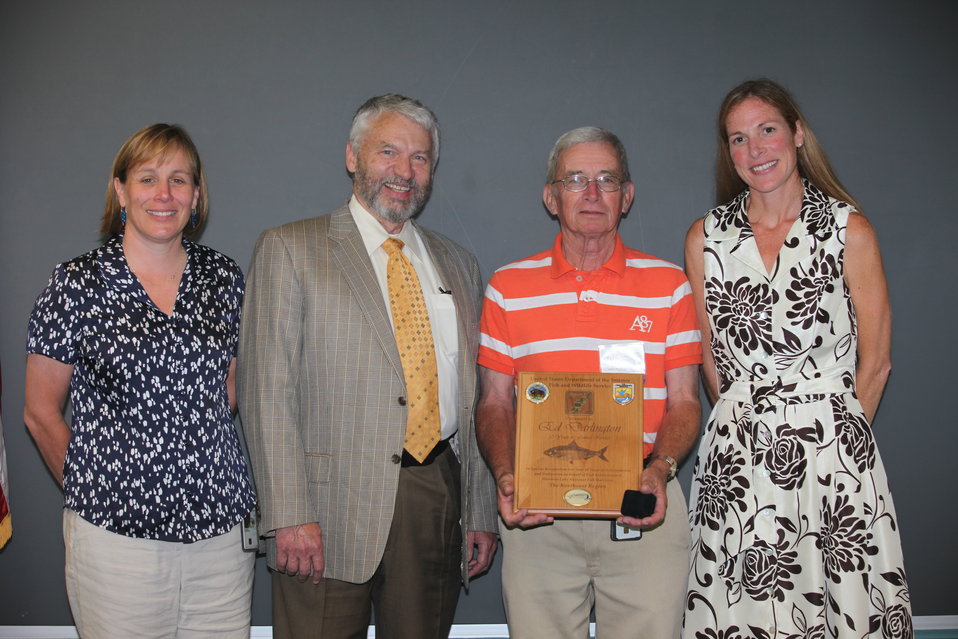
Ed Darlington recieved a special recognition award for 50 years of Service.
From left to right: Deputy Regional Director Deb Rocque, Deputy Director Rowan Gould, Ed Darlington and Regional Director Wendi Weber